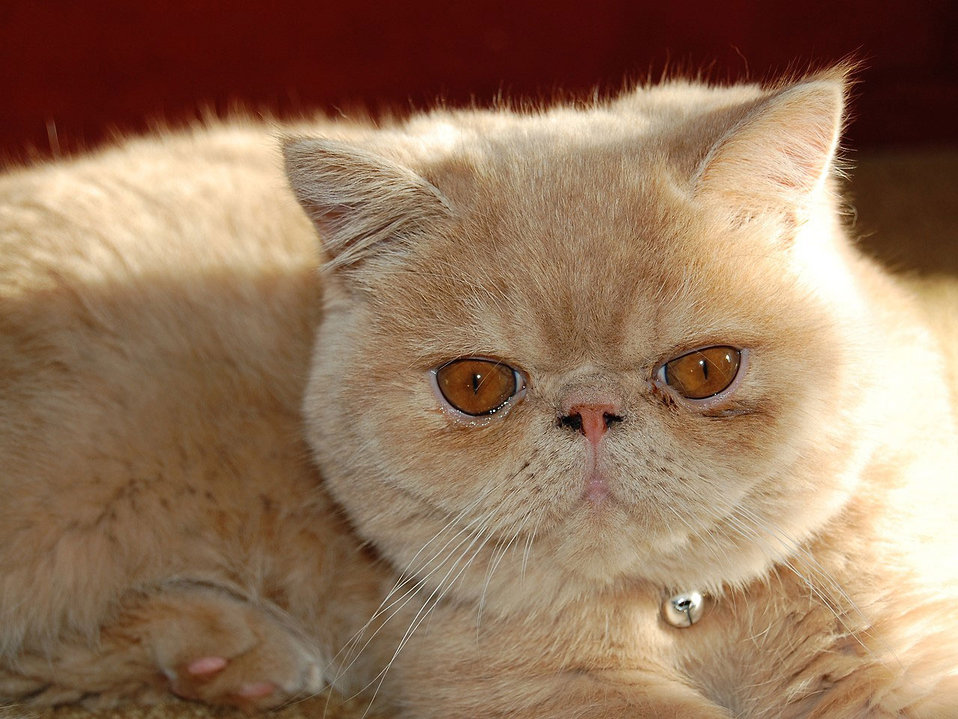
My persian rascal

My exotic short-haired persian cat named rascal.